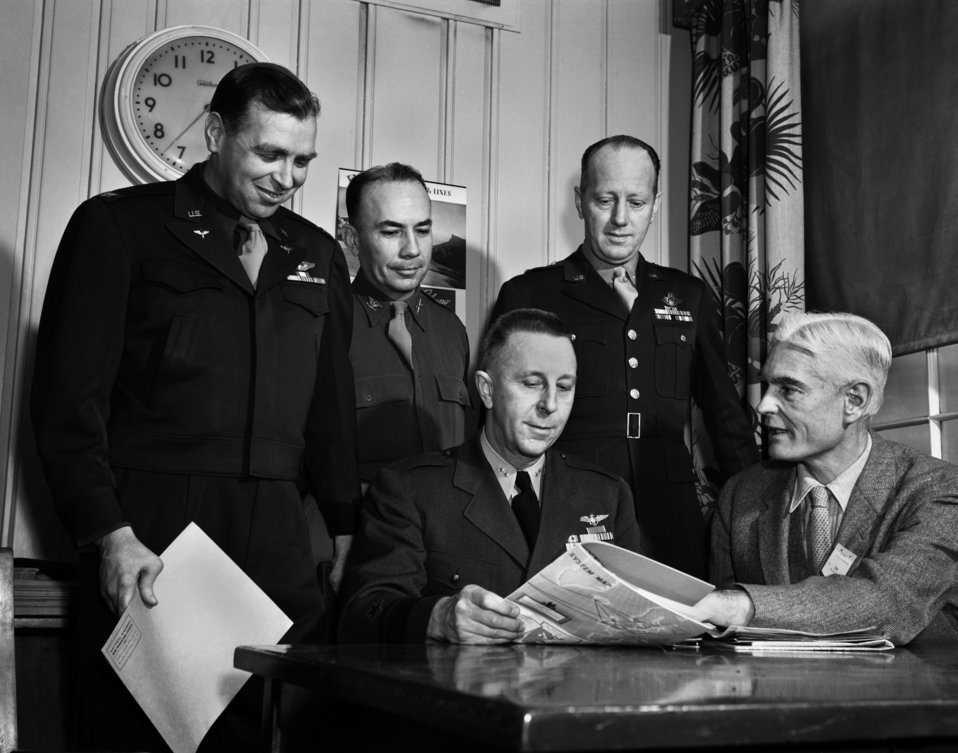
Fairchild Seminar 1947 Oak Ridge

3294-2cpa DOE photo Ed Westcott 2-13-1947 L to R Col. T.A. Sims, Col. John A. Hines, Gen. A.R. Crawford, Rear Admiral T.C. Lonnquest, and Canlton W. Ward Oak Ridge Tennessee